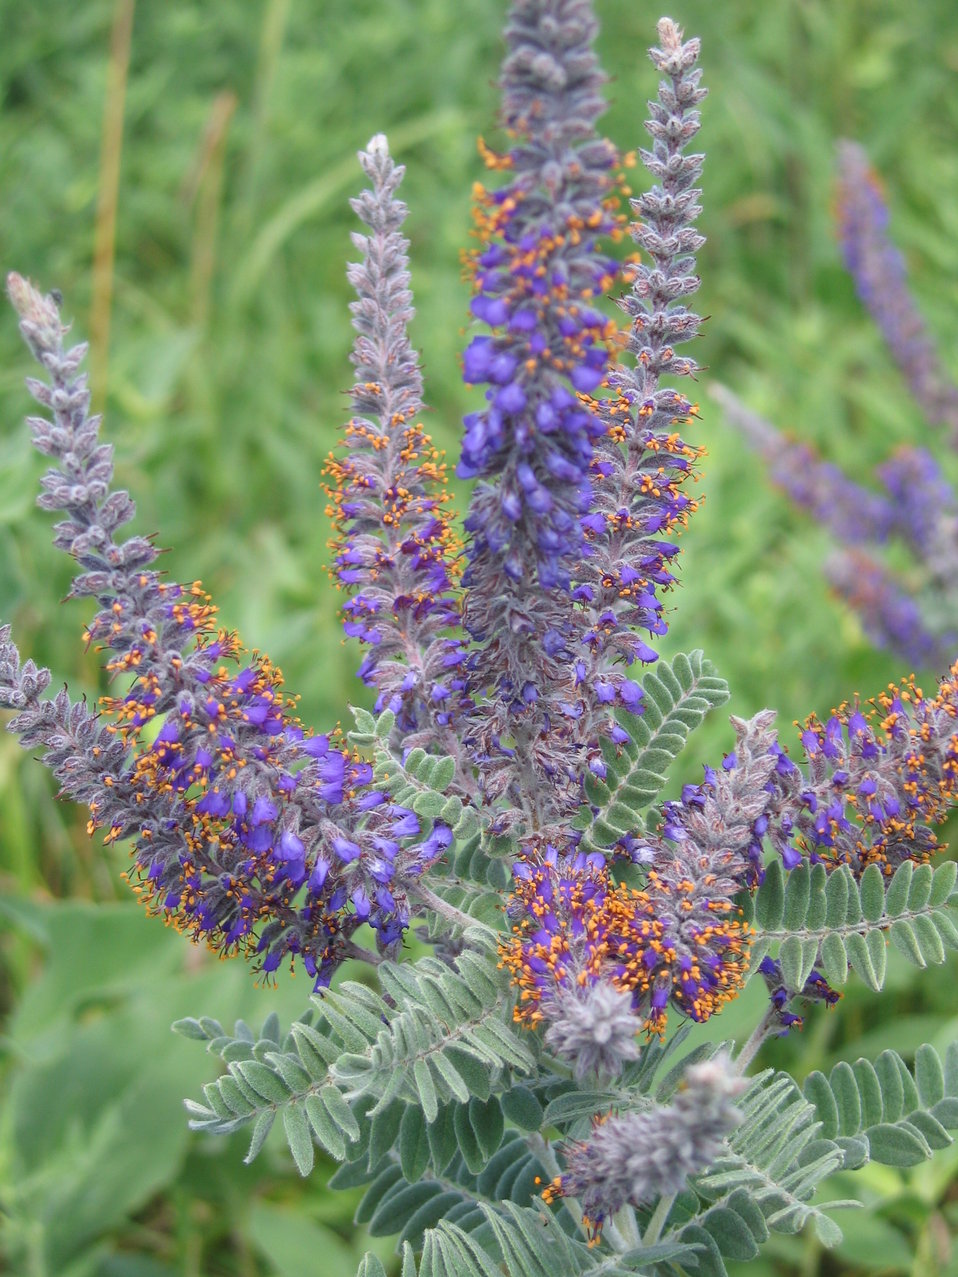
Leadplant

When it is not blooming, leadplant is a gray-green, lead-like color. It is a shrubby, deep rooted plant that is an indicator of good quality prairie.